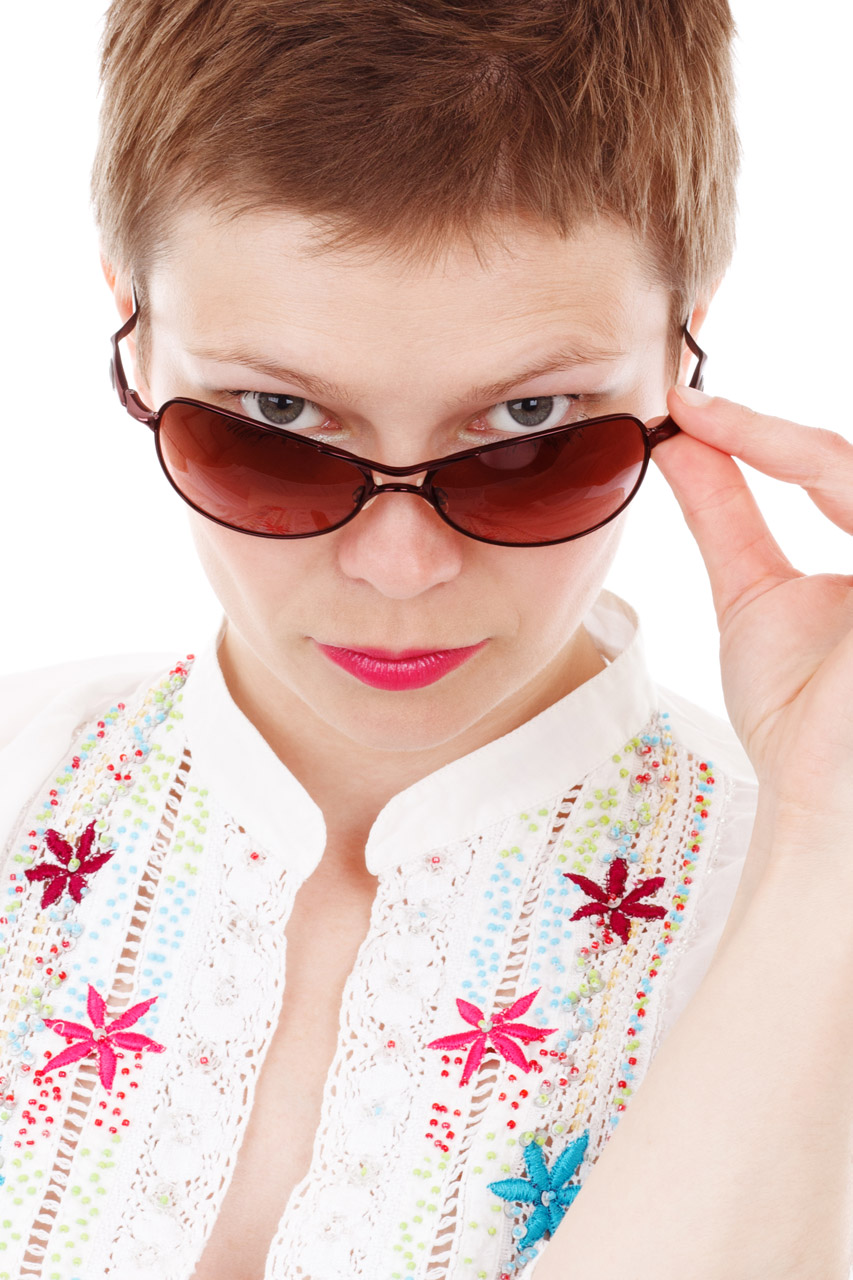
I am watching you

Young woman looking through sunglasses in summer clothes isolated on white background.